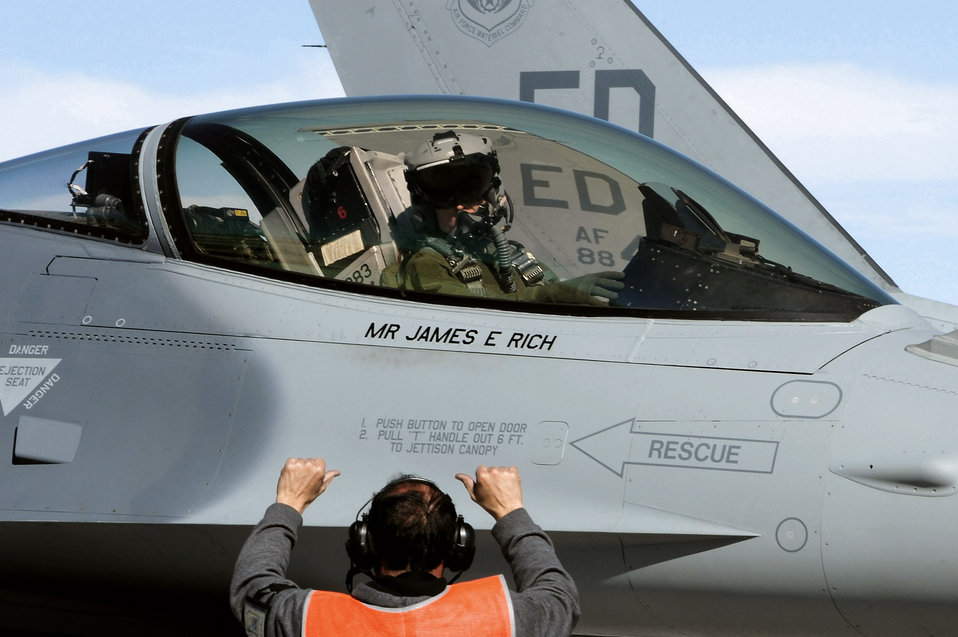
416th FLTS first AFMC unit participates at Red Flag

Alfonso Duran prepares to taxi an F-16 Fighting Falcon in support of Red Flag 09-2 Feb. 4 at Nellis Air Force Base, Nev. Red Flag is a multi-national exercise providing a realistic environment to practice combat scenarios. The experience gained during the exercise is vital to the survival of air crews in combat. Mr. Duran is a production supervisor assigned to the 416th Flight Test Squadron at Edwards Air Force Base, Calif.